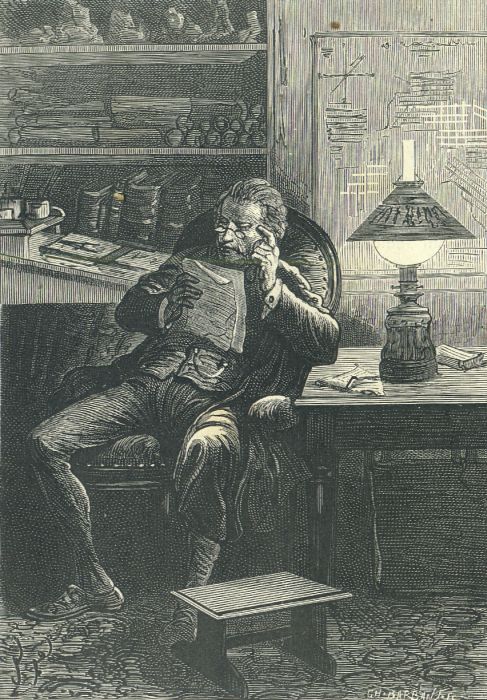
An illustration from the novel 'The Child of the Cavern' (alternative English titles for this novel include: Black Diamonds, Black Indies, Child of the Cavern, or Strange Doings Underground and The Underground City) by Jules Verne drawn by Jules Férat. Polski: Ilustracja powieści Juliusza Verne'a 'Czarne Indie' autorstwa Julesa Férata. Français : 'Les Indes noires', Jules Férat. Orginal description from the book: Français : James Starr.